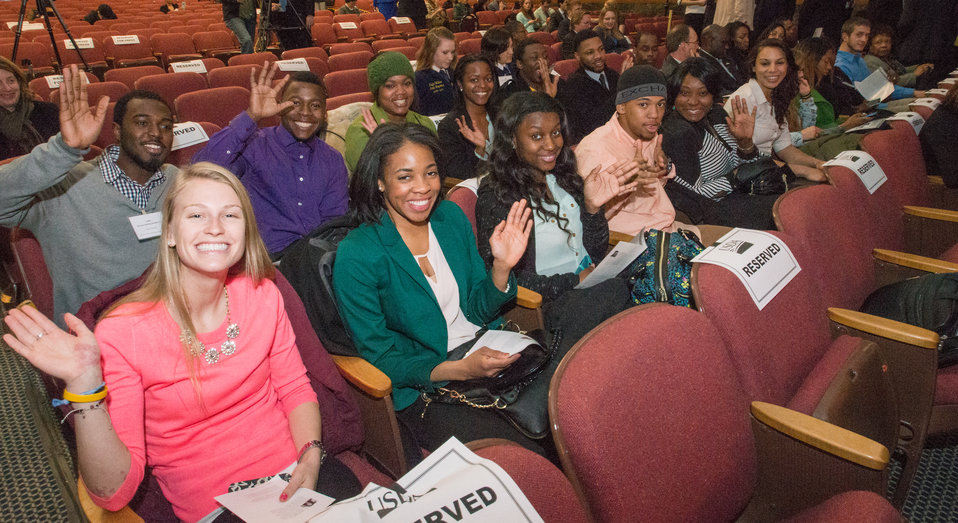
Students from University of Maryland - Eastern Shore attending the Borlaug Symposium in the Jefferson Auditorium at the U.S. Department of Agriculture (USDA) headquarters, in Washington, D.C. on Tuesday, Mar. 25, 2014.